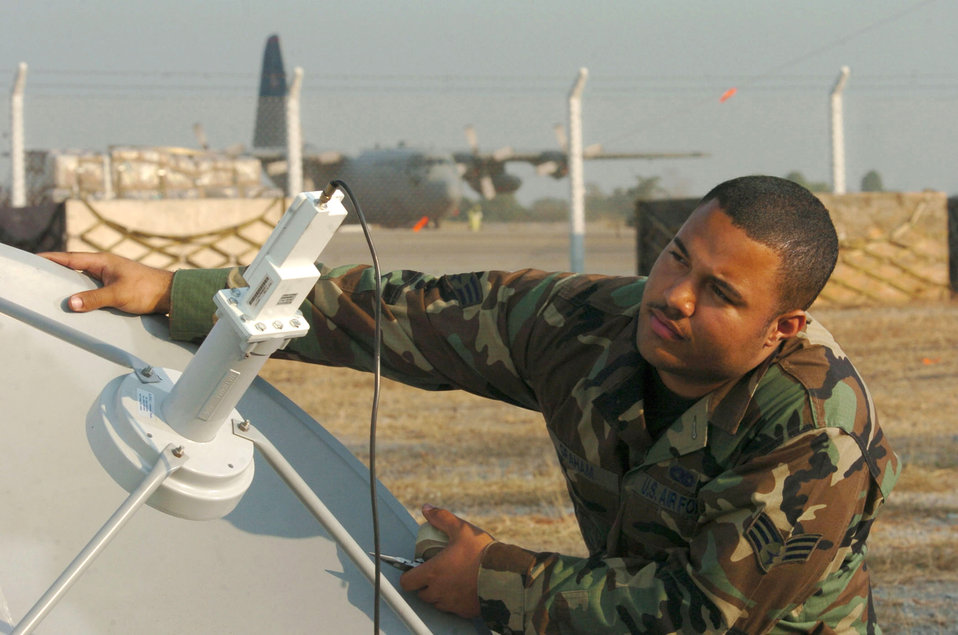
Relief effort switches gears

UTAPAO, Thailand -- Senior Airman John Graham inspects a satellite dish during tsunami relief operations here. He is a technical control specialist deployed from the 18th Communications Squadron at Kadena Air Base, Japan. The Airmen from the squadron provide communications support such as telephones and internet service to deployed troops.